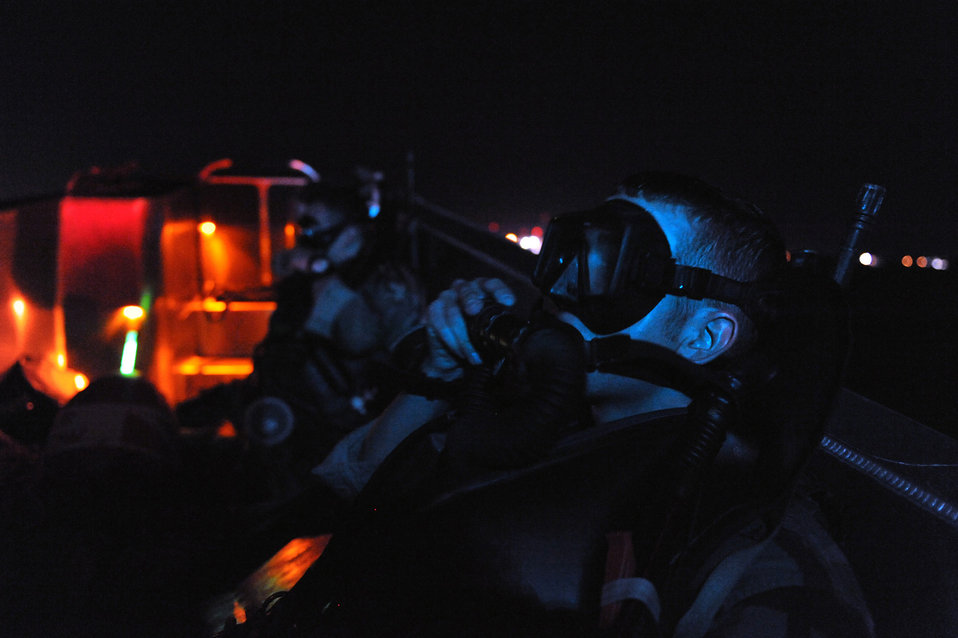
Tyndall Airmen prepare for morning dive

Airmen put on their gear seconds before an early morning dive during their combat dive course June 10, 2010, at Panama City Beach, Fla. The Airmen are combat controllers in training assigned to the 342nd Training Squadron Det 2.